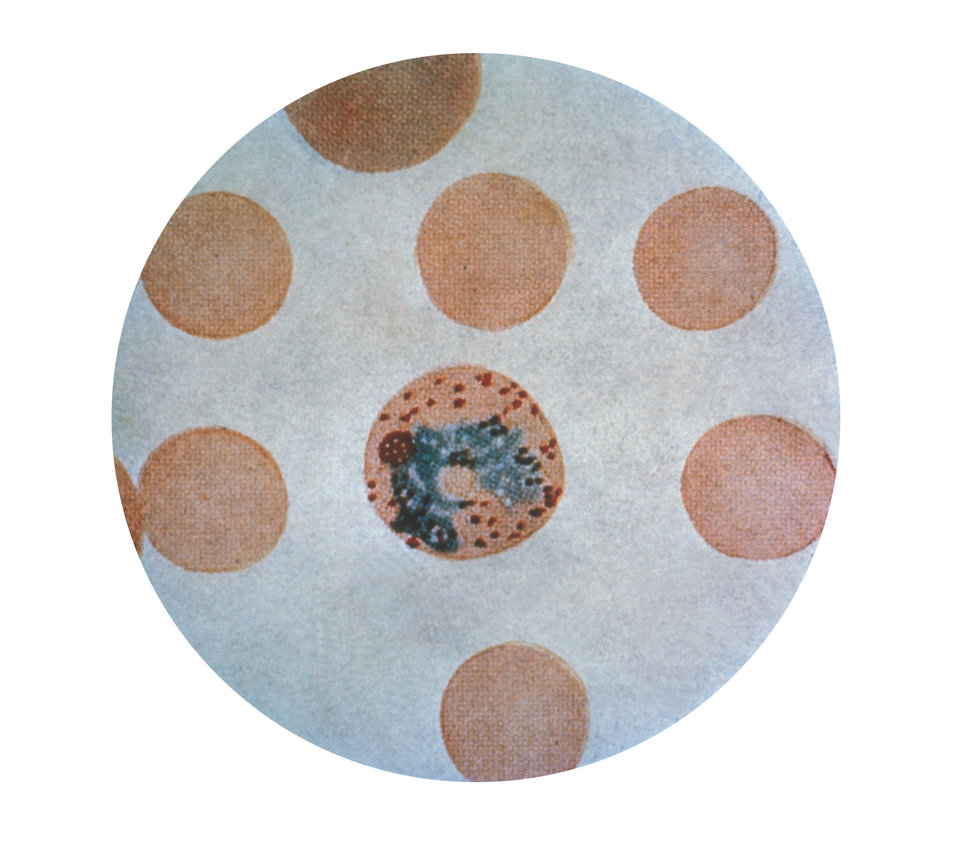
A photomicrograph of Plasmodium vivax in its erythrocytic schizont stage, using Wright's stain. (x1500)